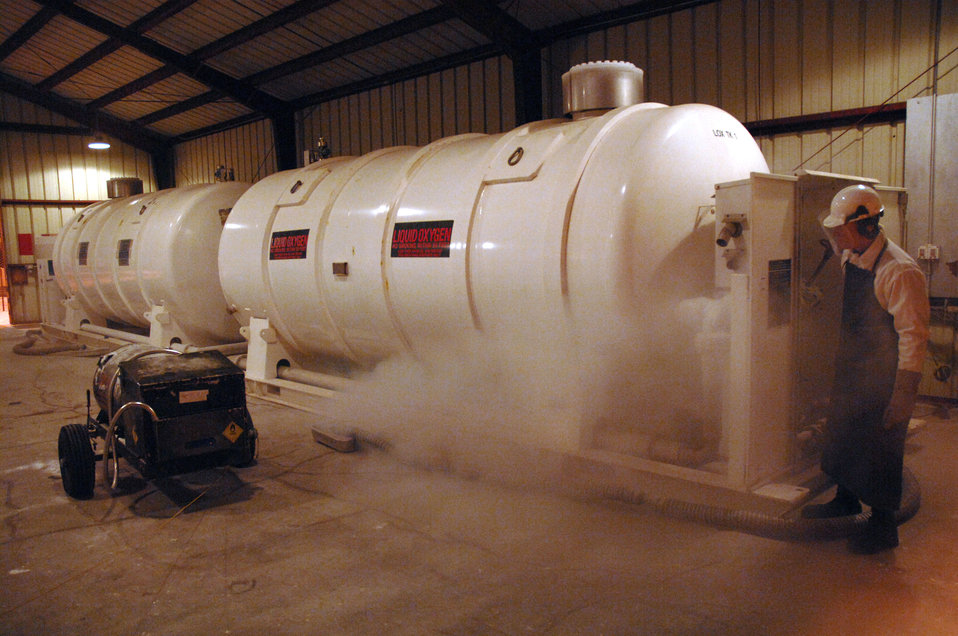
Cyrogenics is a cold business

Airman 1st Class Andrew Tuttle purges the discharge tube of a liquid oxygen tank Dec. 20 to clear any impurities that may have settled since its last use. The plume is the result of burnoff and the extremely low boiling point of liquid oxygen. Airman Tuttle is assigned to the 354th Logistics Readiness Squadron at Eielson Air Force Base, Alaska.